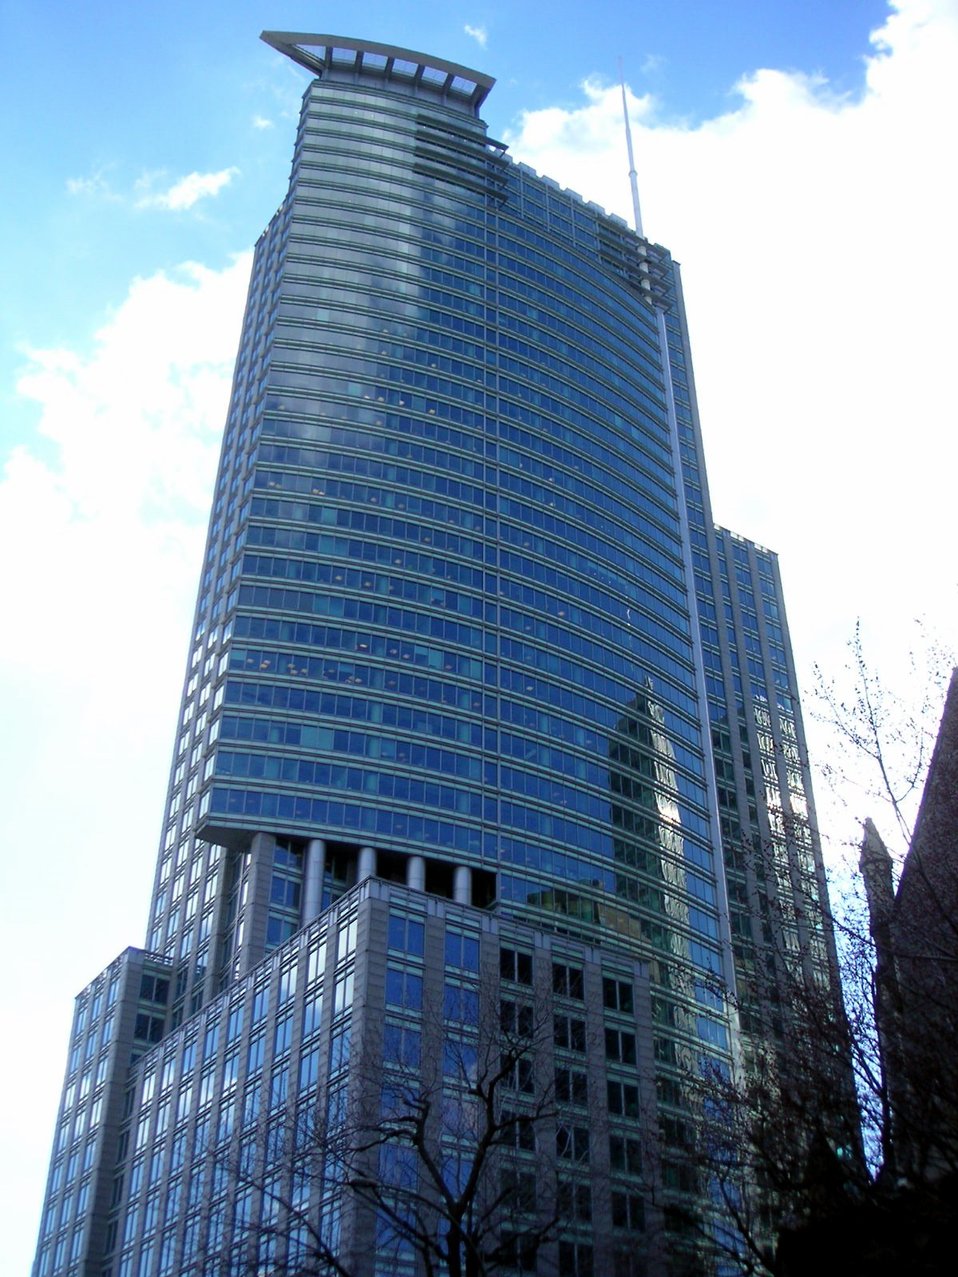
The 1250 René-Lévesque seen from the east.